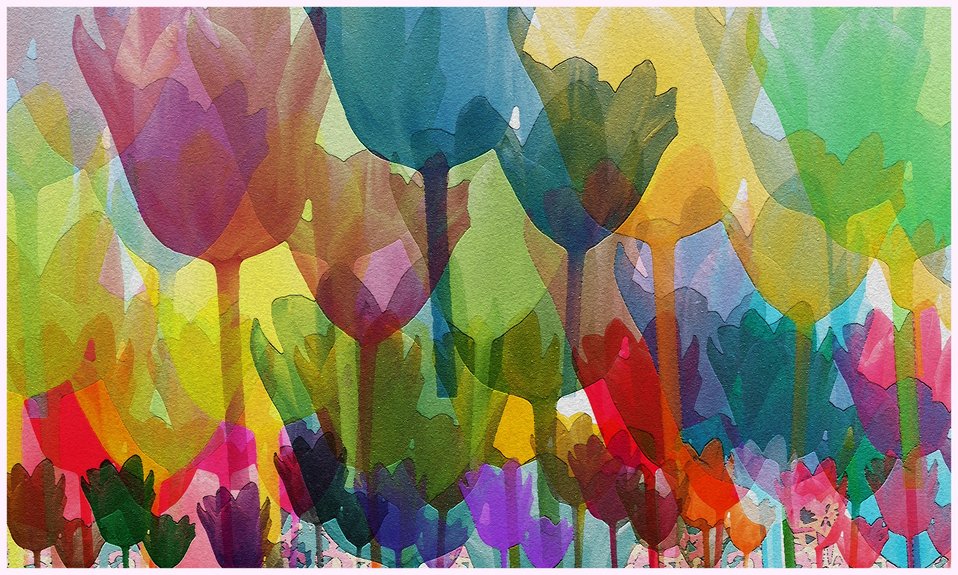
Tulips

Colored tulips, one over the other.